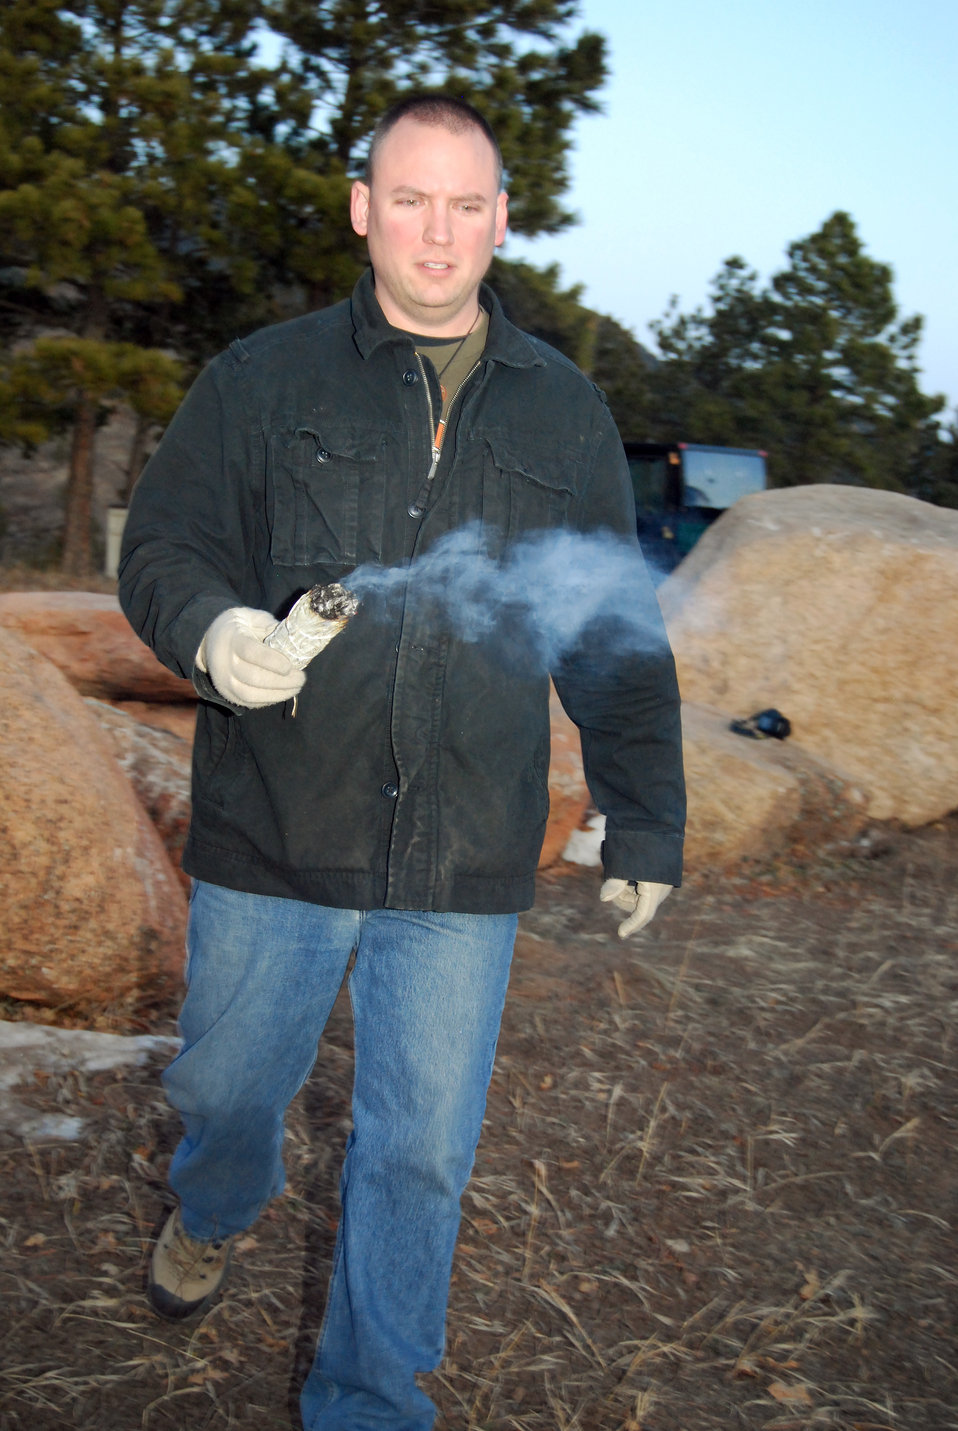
Academy chapel to add outdoor circle to worship areas

Tech. Sgt. Robert Longcrier uses white sage to consecrate a Pagan worship area on the hill overlooking the Cadet Chapel and the Visitor Center just after sunrise on the winter solstice Dec. 21, 2009, at the U.S. Air Force Academy, Colo. The chapel is scheduled to officially designate the circle as a Pagan chapel during a dedication ceremony in March 2010. Sergeant Longcrier is the Pagan ley leader at the Academy.